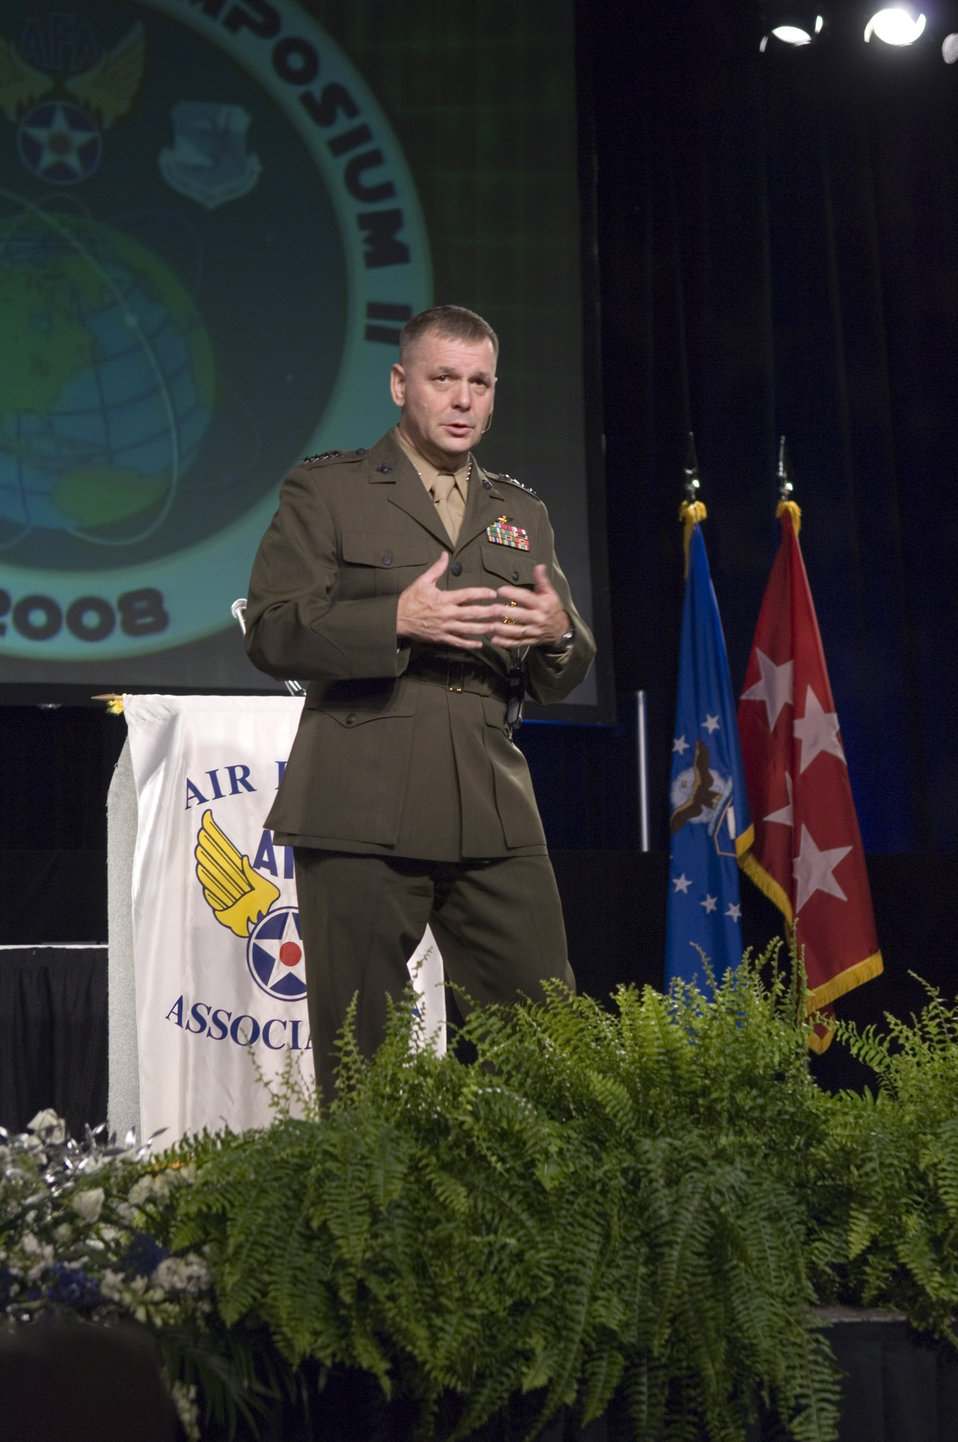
JCS vice chairman: break service barriers

Gen. James E. Cartwright, vice chairman of the Joint Chiefs of Staff, addresses attendees June 19 at the second annual Air Force Cyberspace Symposium in Marlborough, Mass.